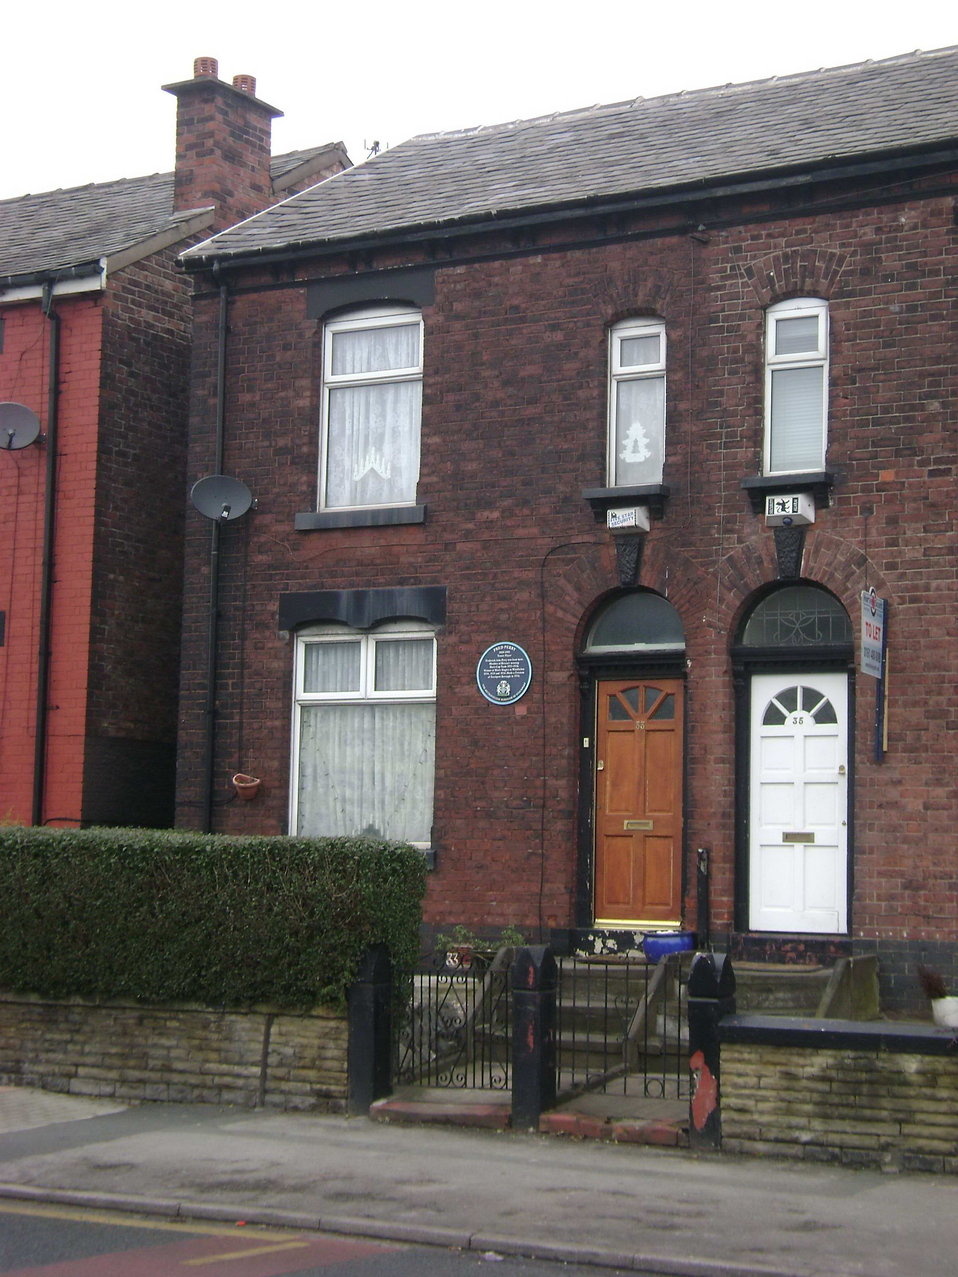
The house where Fred Perry was born, Stockport.